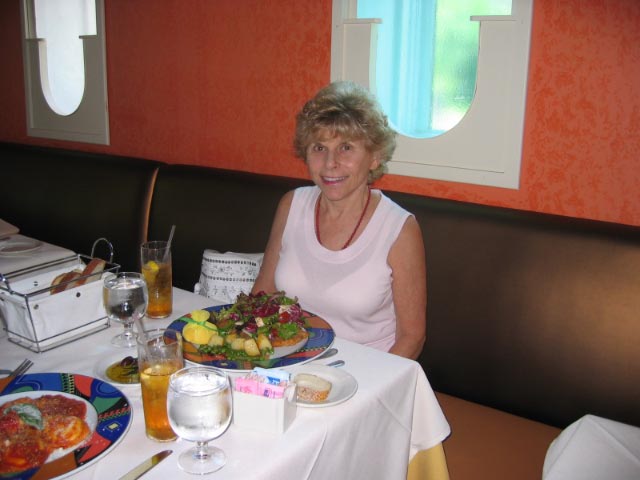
Gary Stolz's mom, Sandy

Gary Stolz, manager at John Heinz National Wildlife Refuge at Tinicum in Philadelphia, says his mom Sandy helped nurture his interest in nature from a young age.